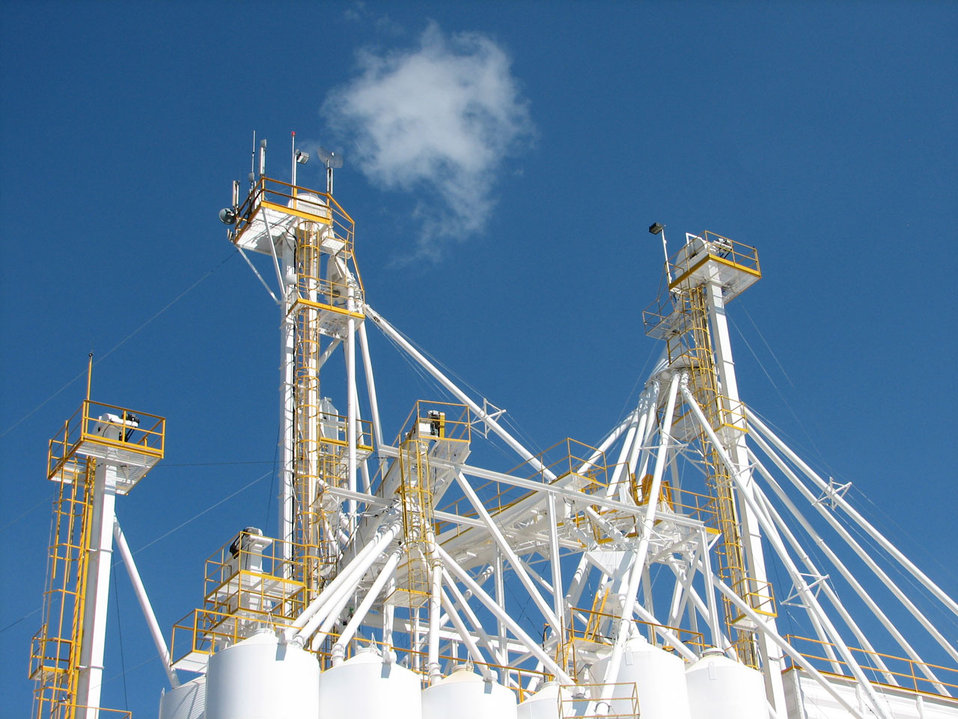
Building structure

Interesting building structure.